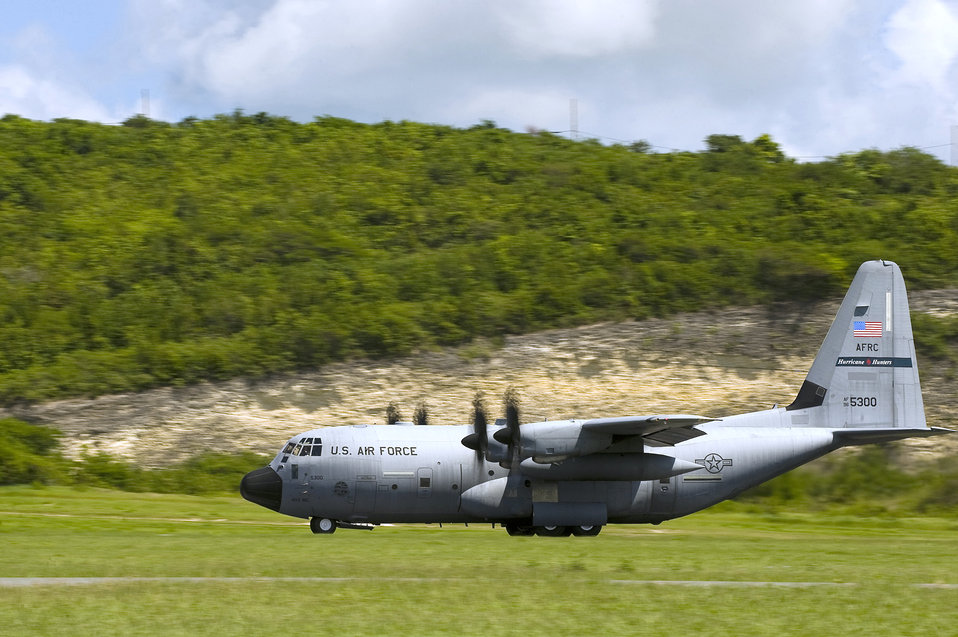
Tracking hurricanes

A WC-130J Super Hercules takes off during a hurricane tracking mission Sept. 19, 2010, at the airport on St. Croix, U.S. Virgin Islands. The aircraft assigned to the Air Force Reserve Command's 53rd Weather Reconnaissance Squadron will collect data on building tropical storms and hurricanes in the Atlantic Ocean.